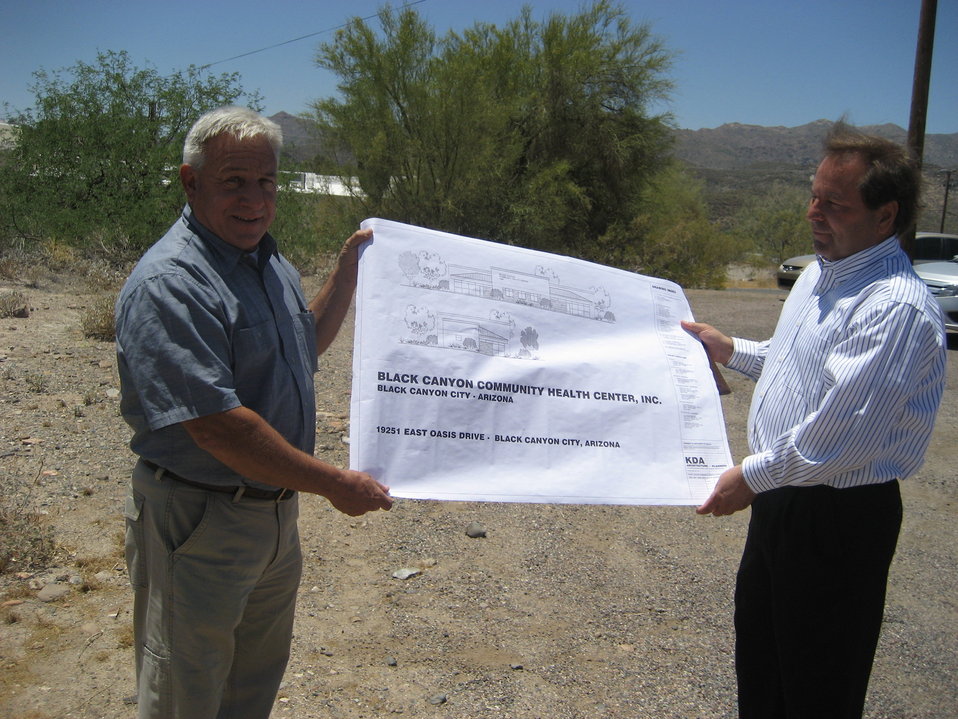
BCCCHealth 005

Architect Gary King and Director and CEO of the Black Canyon Community Health Center, Inc. (BCCHC) Dr. Randy Hancock look over the plans for the new Black Canyon Community Health Center, in Black Canyon, CO on June 4, 2012. U.S. Department of Agriculture’s (USDA) Rural Development (RD) made a Direct Community Facilities Loan to help build a modern new clinic for Black Canyon City, CO.